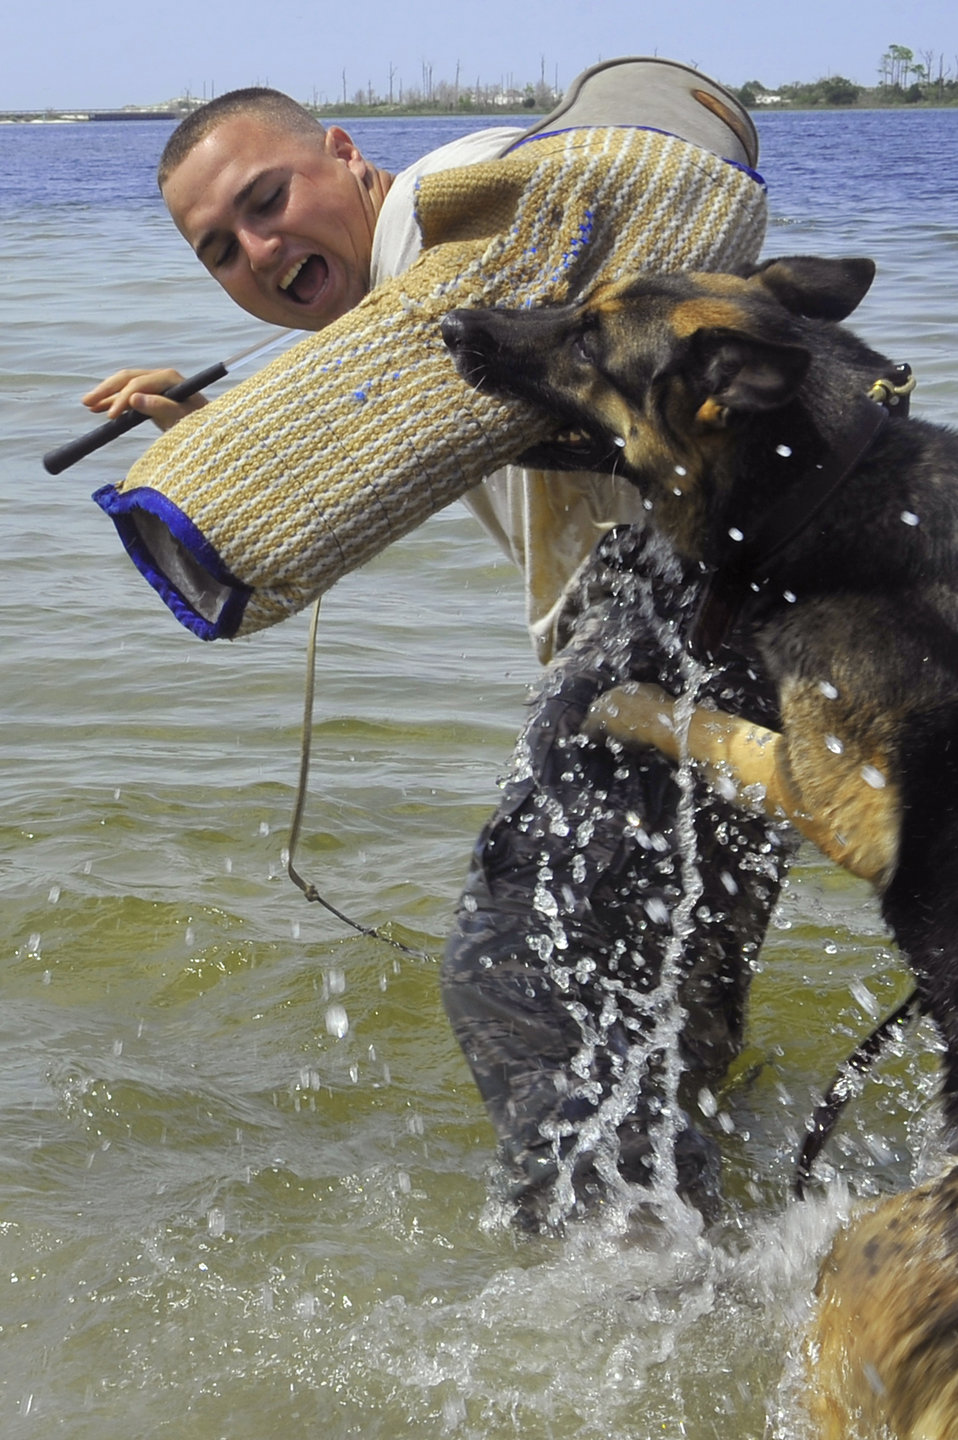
Ouch!

Britta, a military working dog, attacks Staff Sgt. Roberto Matos July 14, 2010, in a controlled water aggression exercise at Hurlburt Field, Fla. This type of training allows the dogs to become more comfortable in different environments. Sergeant Matos and Britta are assigned to the 1st Special Operations Security Forces Squadron.